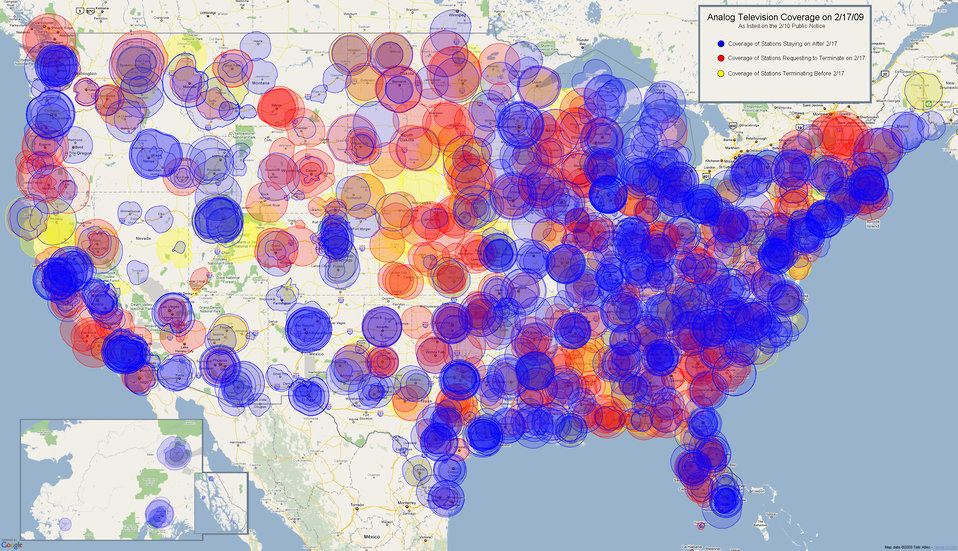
whole us all stations alaska